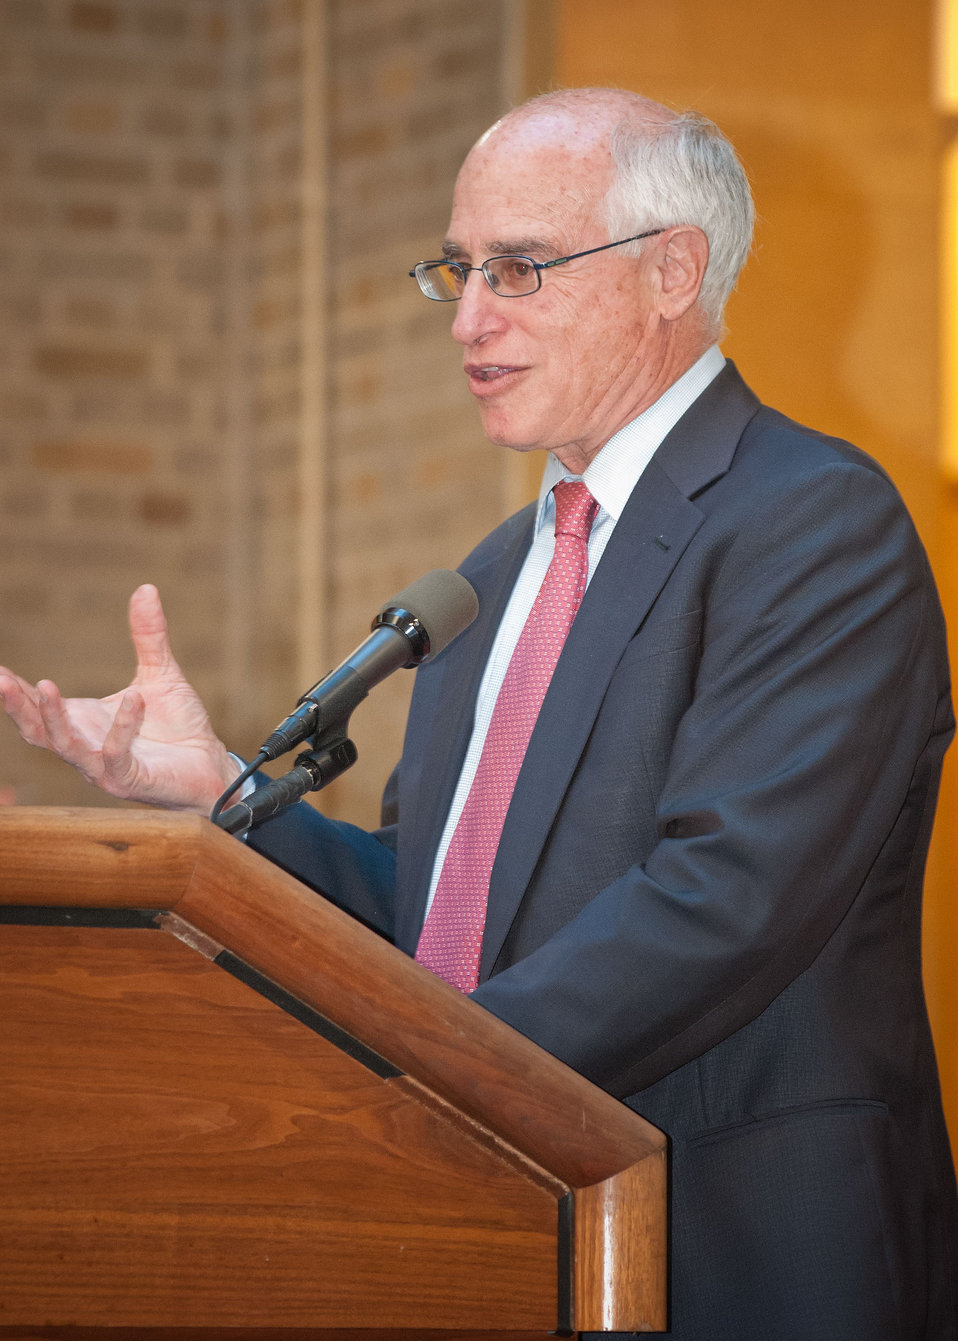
Harris Sherman, Under Secretary, Natural Resources and Environment and a Colorado native spoke of the gift to all Americans at the Chimney Rock National Monument Dedication Celebration held at the United States Department of Agriculture in Washington, D.C., on Monday, Sept. 24, 2012. President Barack Obama designated Chimney Rock in the San Juan National Forest in Southwest Colorado as a national monument on Friday, Sept. 21, 2012. A move that will help preserve 4,726 acres in southwestern Colorado surrounded by the Southern Ute Indian Reservation. The land will be managed by the U.S. Department of Agriculture Forest Service with assistance from local tribes. Chimney Rock was home to the Pueblo People 1,000 years ago and is culturally significant for Native American tribes.